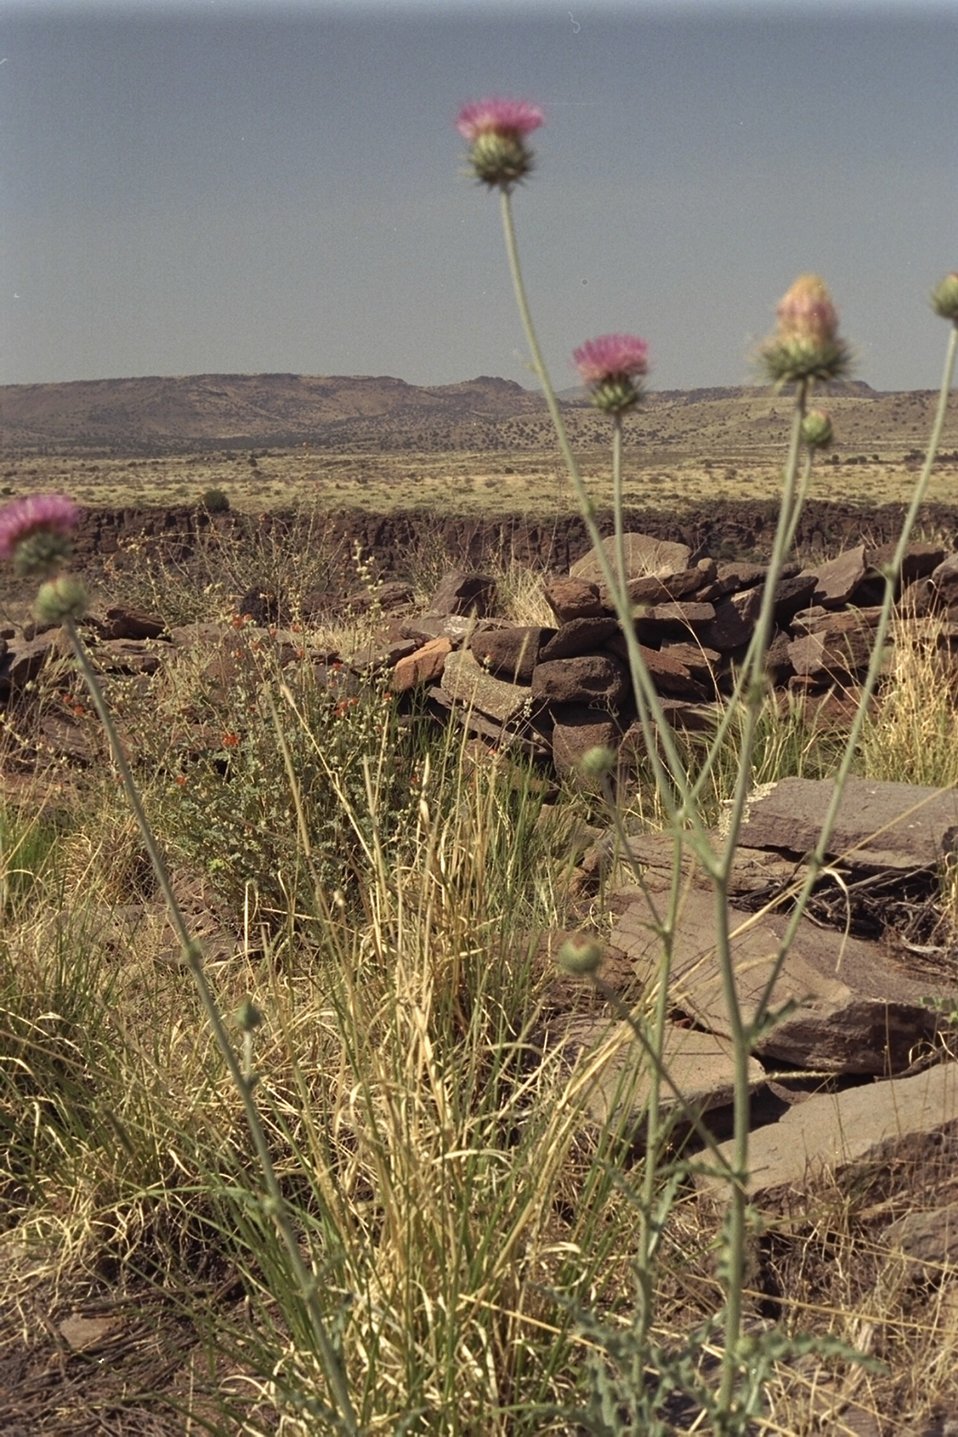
Blurry little weeds with purple flowers and an Agua Fria National Monument mountain range in the background.